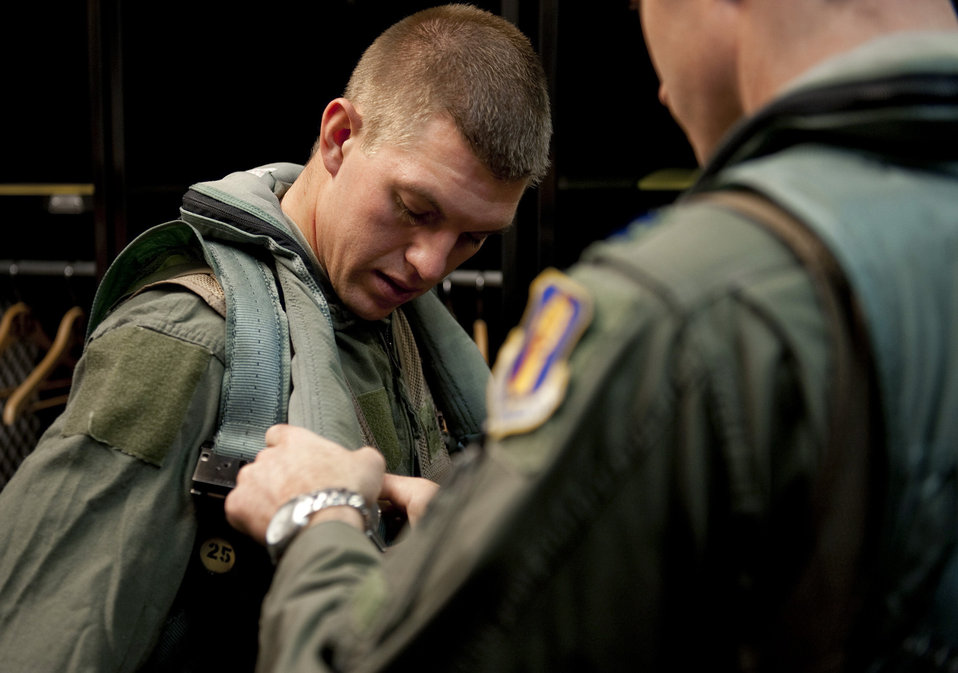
Misawa Airmen earns flight of his life

Capt. Chris Nations, 14th Fighter Squadron standardization and evaluations officer, assists Staff Sgt. Bernard Mutz with his flight survival gear at Misawa Air Base, Japan, Oct. 22, 2010. Sergeant Mutz is a readiness and emergency manager with the 35th Civil Engineer Squadron, and earned the flight for his outstanding service as part of the 35th Fighter Wing’s incentive flight program.